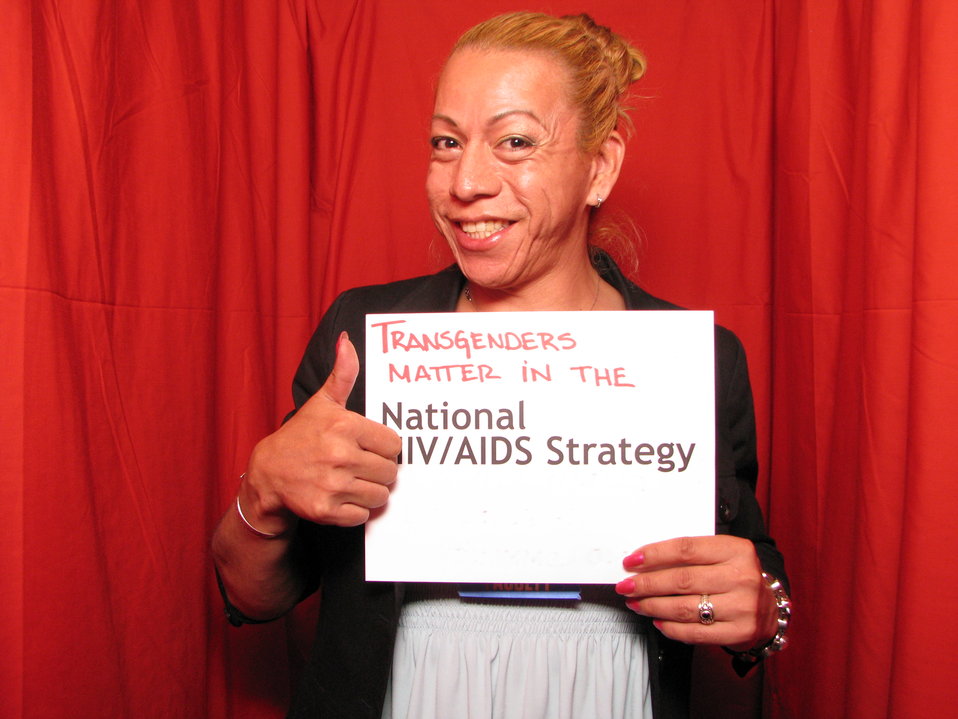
Transgenders Matter in the National HIV/AIDS Strategy

From the AIDS.gov photo booth at the U.S. Conference on AIDS, September 2010 (Orlando, FL).